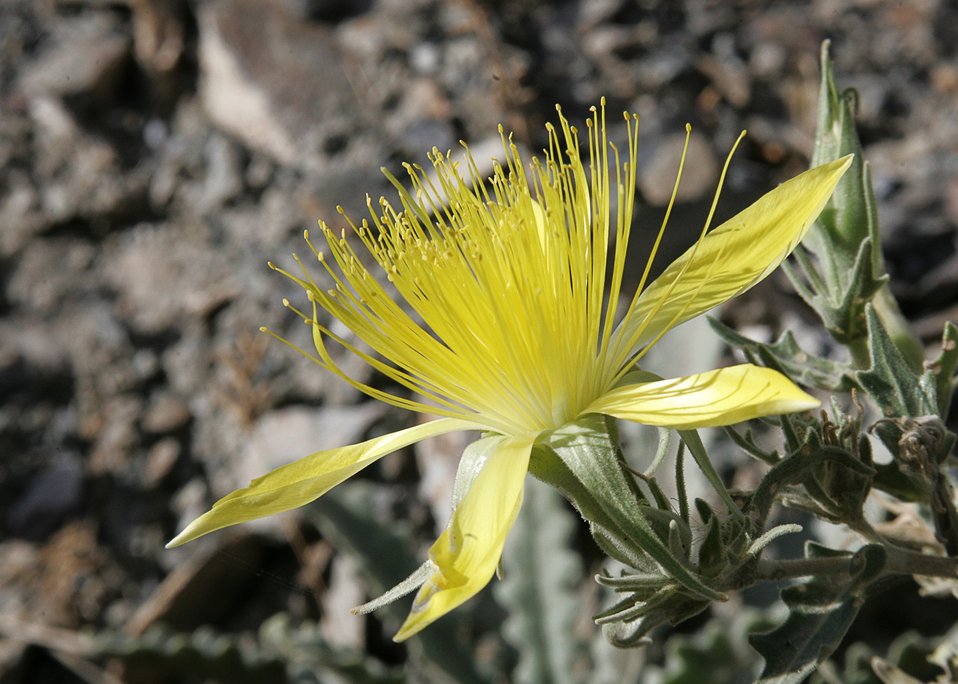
Mentzelia, one of the blazing stars.